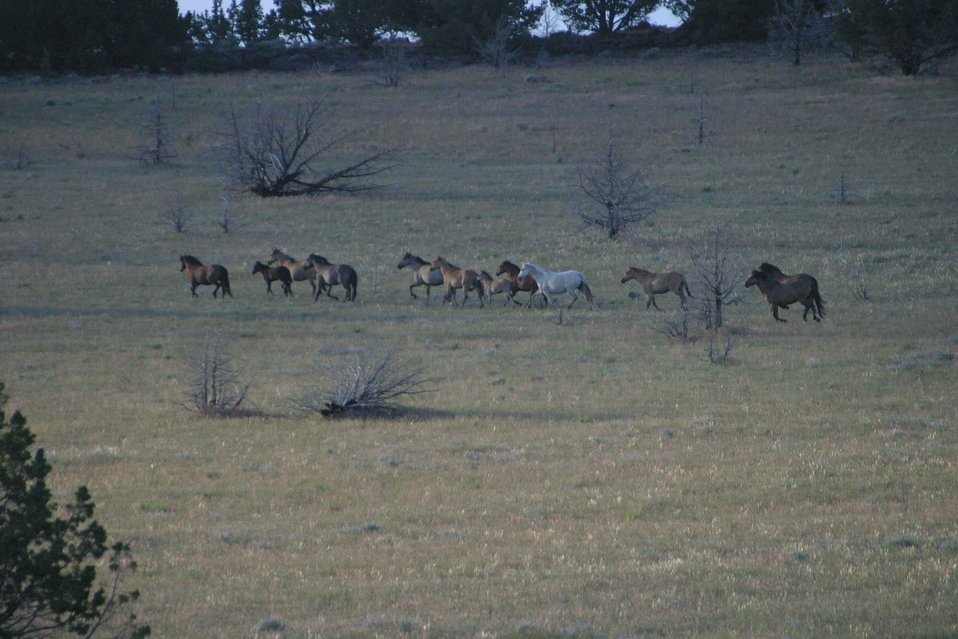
Wild Horse(s) in the Kiger Wild Horse Herd Management Area.